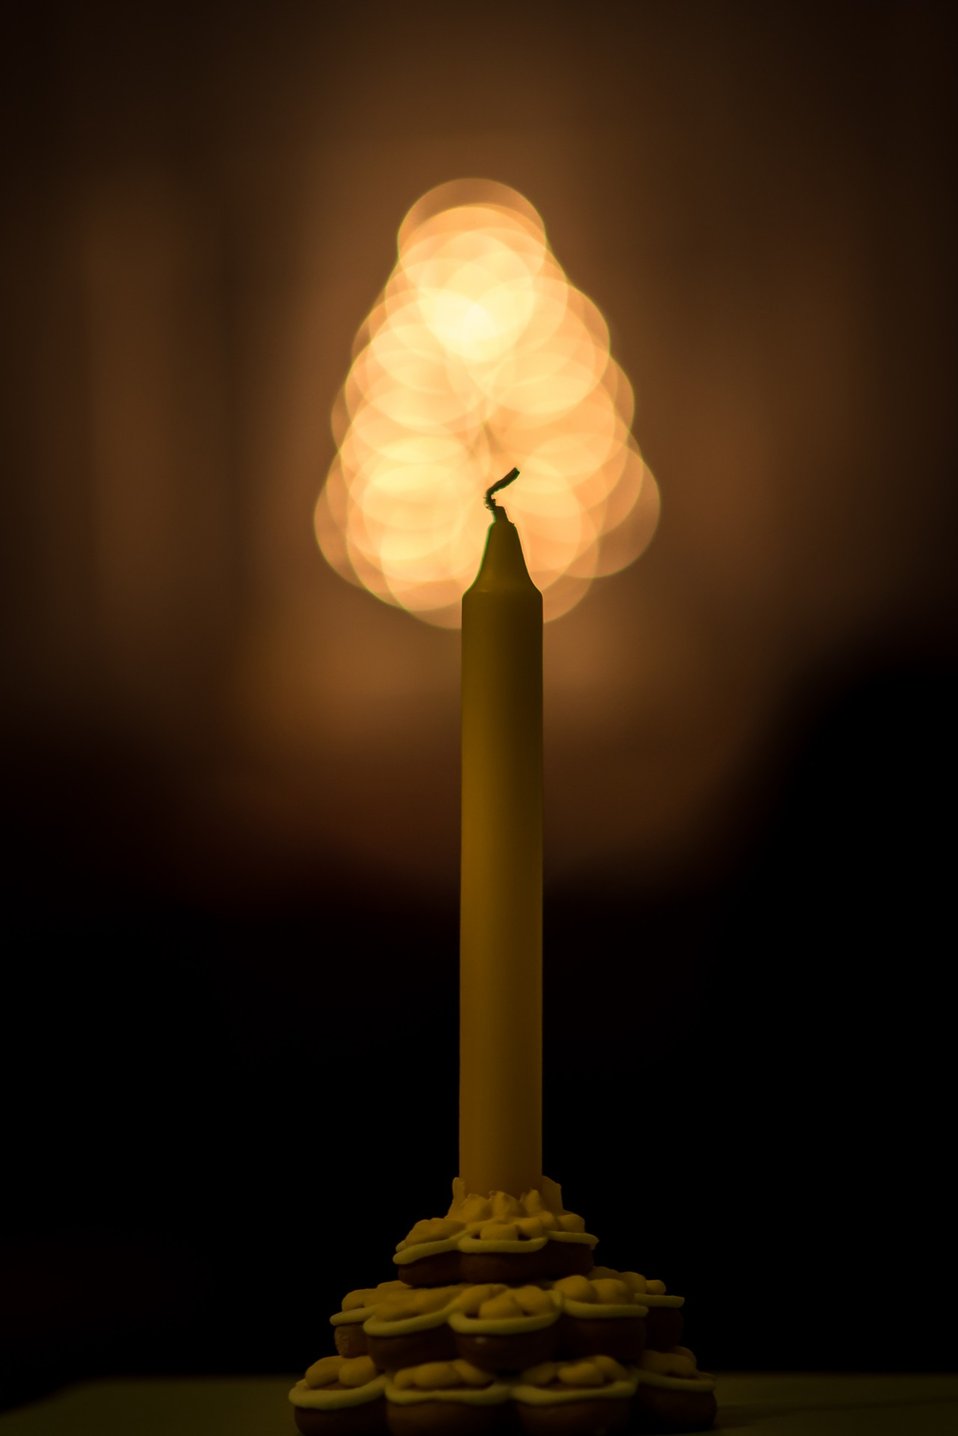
Candle

Christmas candle in the light of lamps.